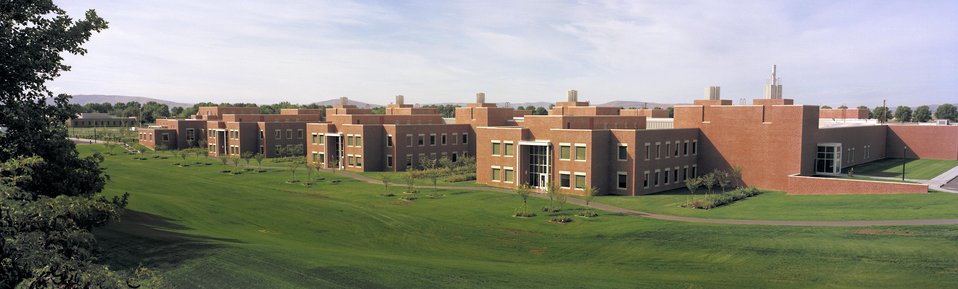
The William R. Wiley Environmental Molecular Sciences Laboratory (EMSL) is located at DOE's Pacific Northwest National Laboratory.

The EMSL, a national user facility, plays a major role in creating safe, permanent, cost effective solutions to many of the country's environmental problems. Multidisciplinary team from across the country work together to understand and control molecular processes, leading to solutions of environmental problems as well as achieve advances in energy, new materials, health, medicine and agriculture.